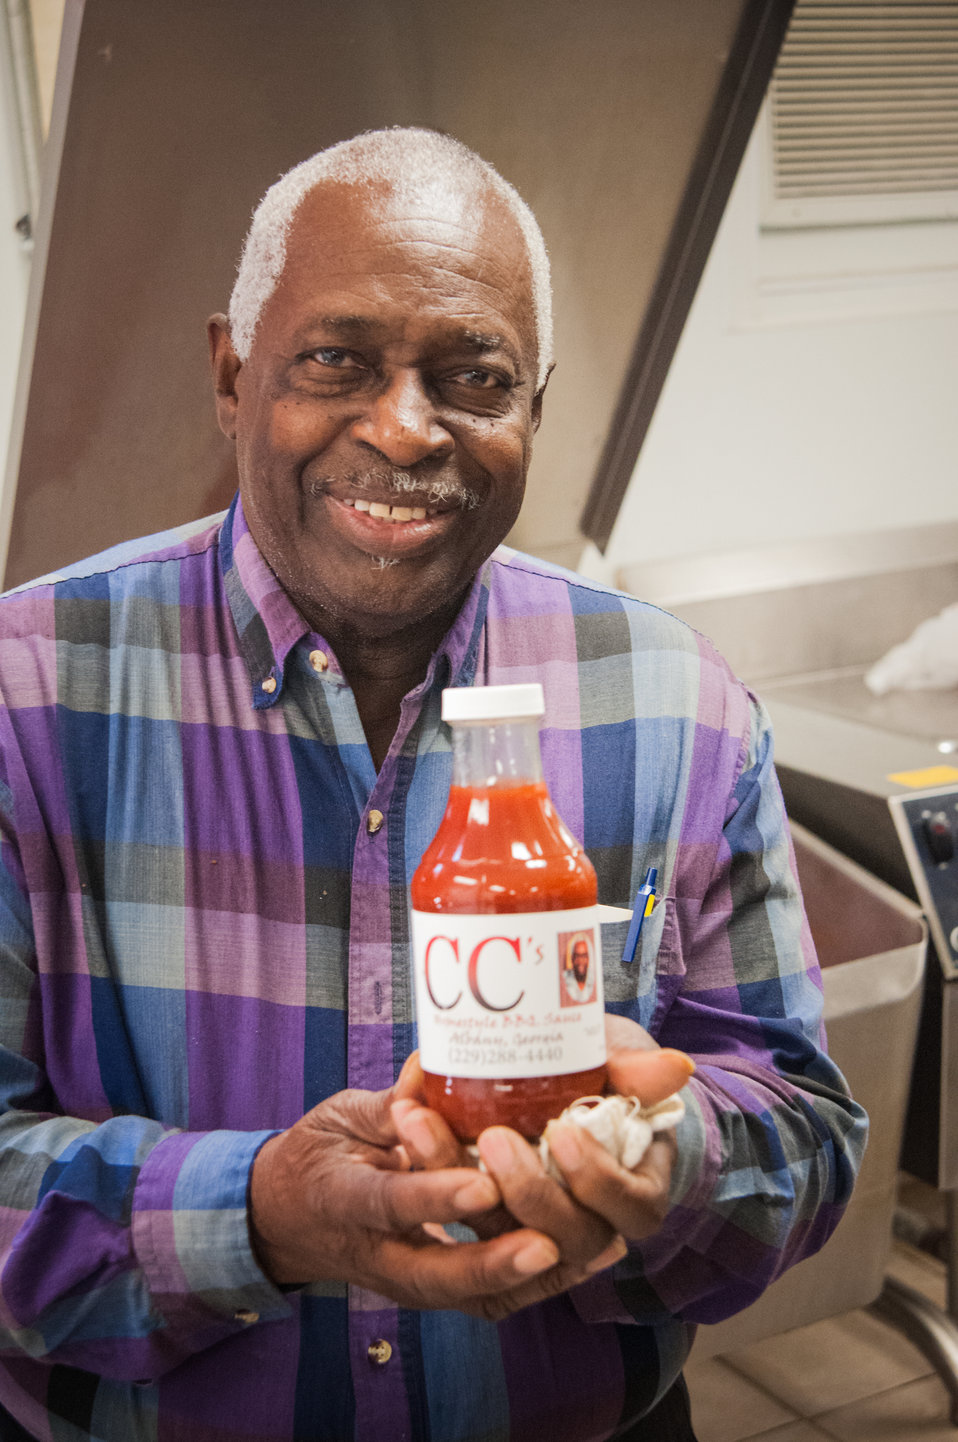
Clarence Cowart holds a jar of his homemade CC’s Home-style BBQ Sauce, which he prepares in the incubator kitchen at the East Baker Historical Society Community Center in Newton, Baker County, GA on Mar. 7, 2013. The East Baker Historical Society Community Center secured a U.S. Department of Agriculture (USDA) Rural Development (RD) Community Facilities (CF) Loan for the kitchen that enabled residents to prepare catered meals and to prepare and package food products. The USDA Strike Force Initiative has designated Baker County, GA as a Strike Force county selected to receive assistance to relieve persistent poverty in historically high-poverty counties.